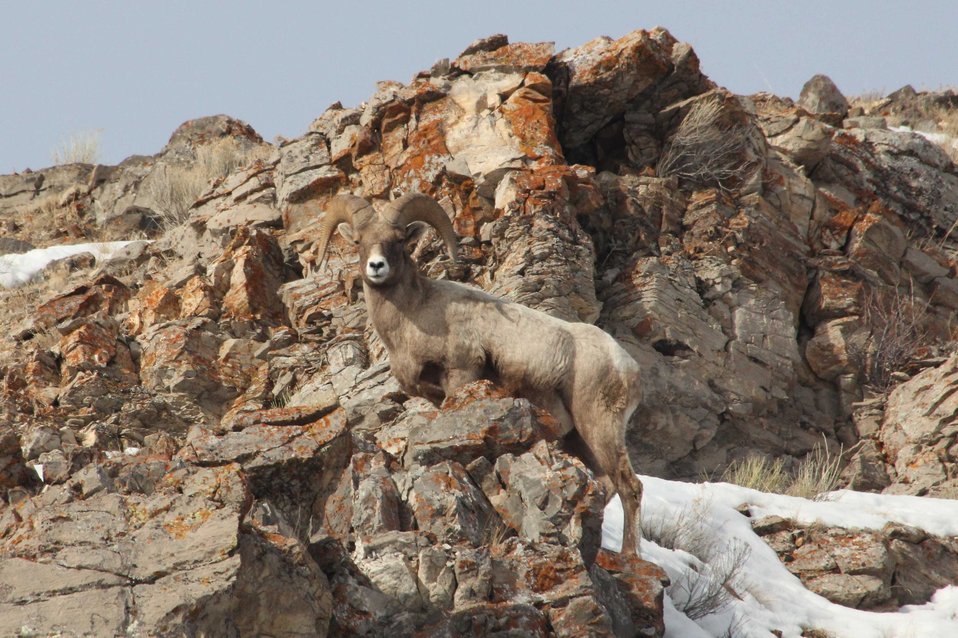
A Regal Pose

A bighorn sheep strikes a regal pose on a rocky ledge atop Miller Butte. The animals are incredibly adept climbers.

Credit: USFWS / Ann Hough, National Elk Refuge volunteer